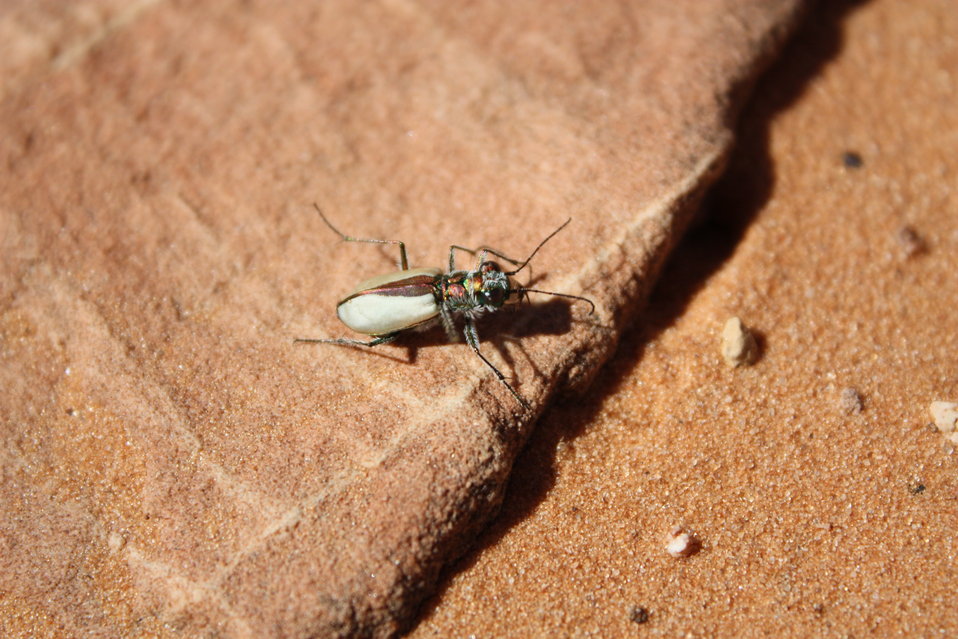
Coral Pink Sand Dune Tiger Beetle

The Coral Pink Sand Dune Tiger Beetle occurs within Kane County, Utah.